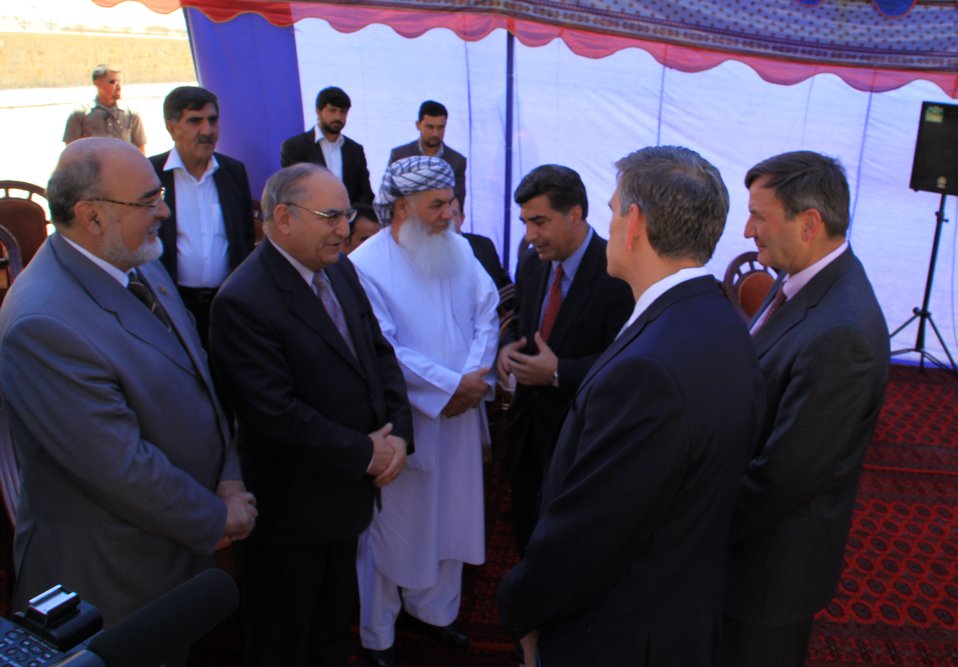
105 MW Tarakhil Power Plant Handover